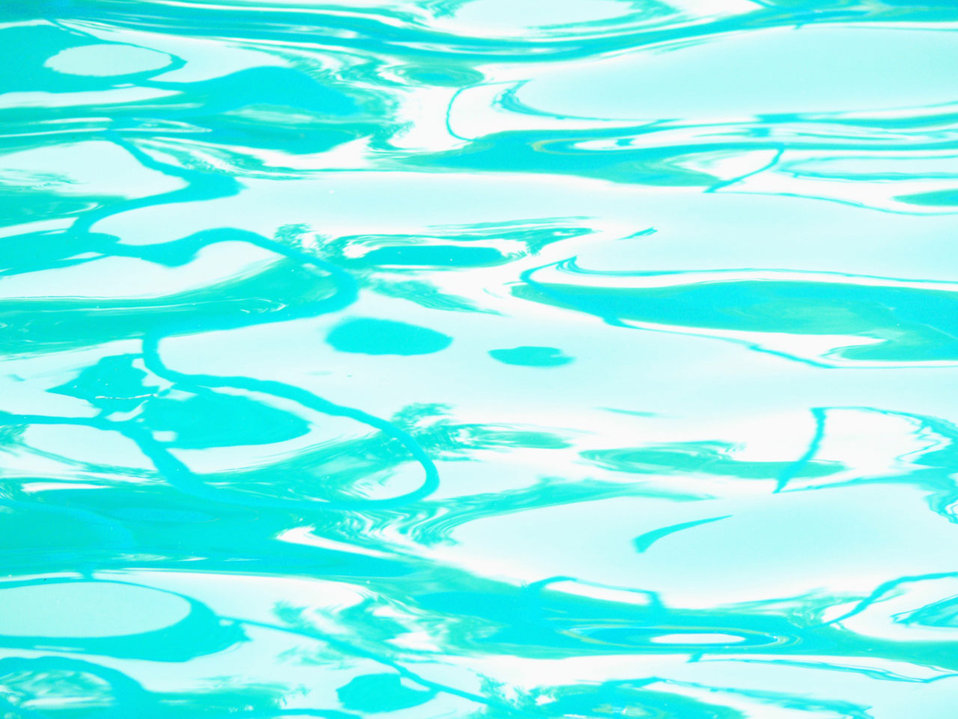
Water

Blue water.